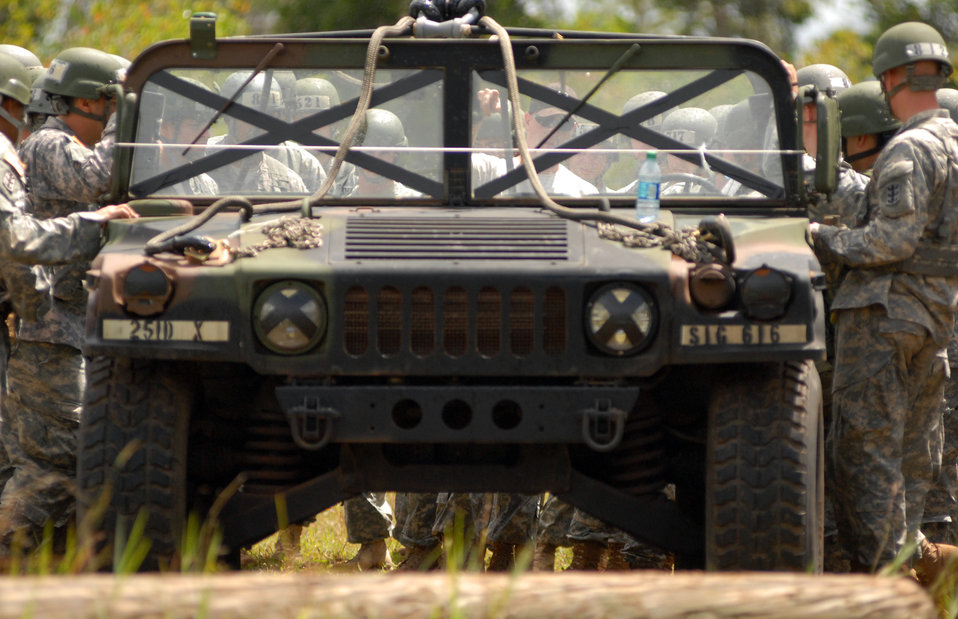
Airmen graduate Air Assault Course with Soldiers

Instructors from the Warrior Training Center at Ft. Benning, Ga., teach Airmen and Soldiers how to sling load a vehicle during the Air Assault course in Wahiawa, Hawaii, May 4, 2010. Five 647th Security Forces Squadron Airmen were chosen to participate with 309 Soldiers in this intense 11-day course April 30 to May 11, 2011.